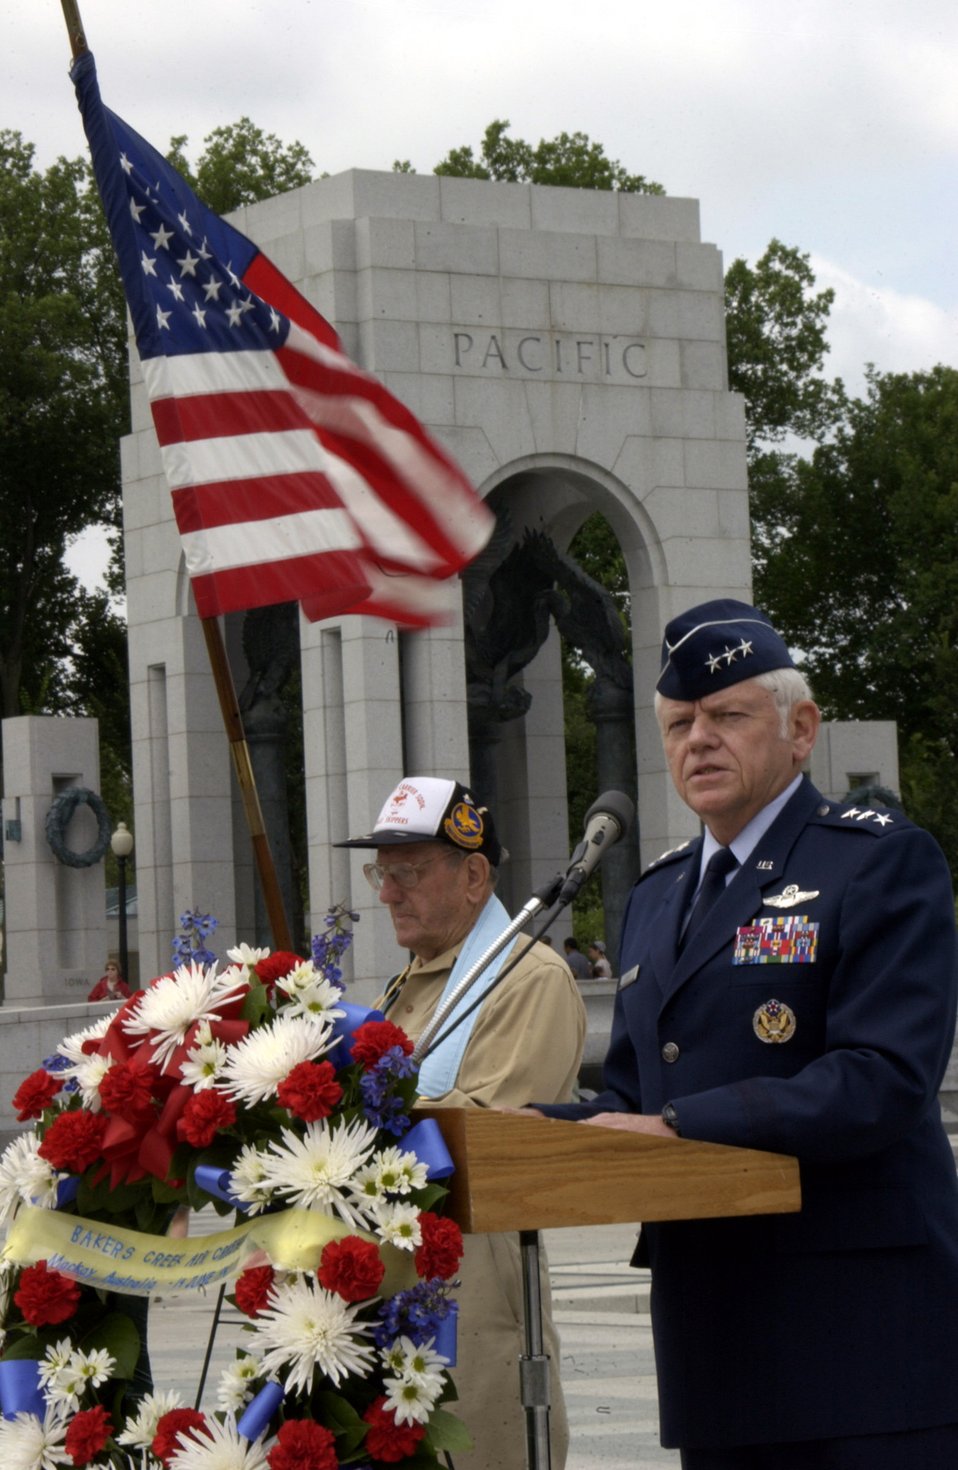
Fallen Bakers Creek servicemembers honored at WWII Memorial

At a ceremony at the World War II Memorial June 14 in Washington D.C., Lt. Gen. Arthur Lichte, Air Force assistant vice chief of staff, recounted the Bakers Creek air crash in Australia in June 1943 where 40 American servicemembers lost their lives. The ceremony here commemorated the 64th anniversary of the crash. Holding the American flag is Chester Kanach, a former staff sergeant in the Army Air Corps during World War II who was a radio operator in the same unit as the fallen service members.